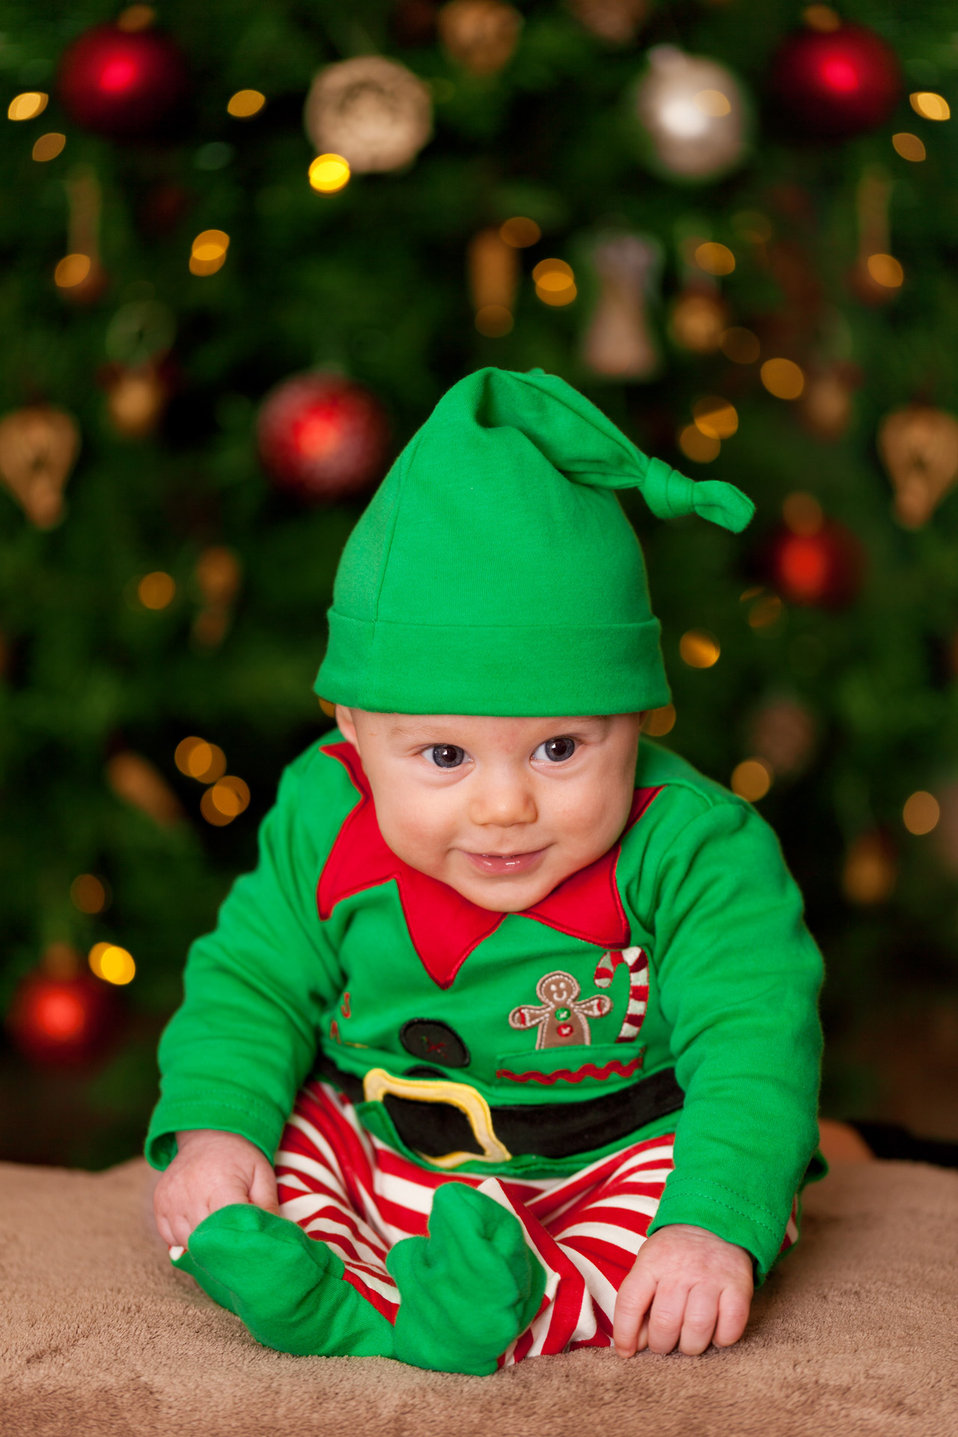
Baby elf

Cute baby elf in front of a christmas tree.